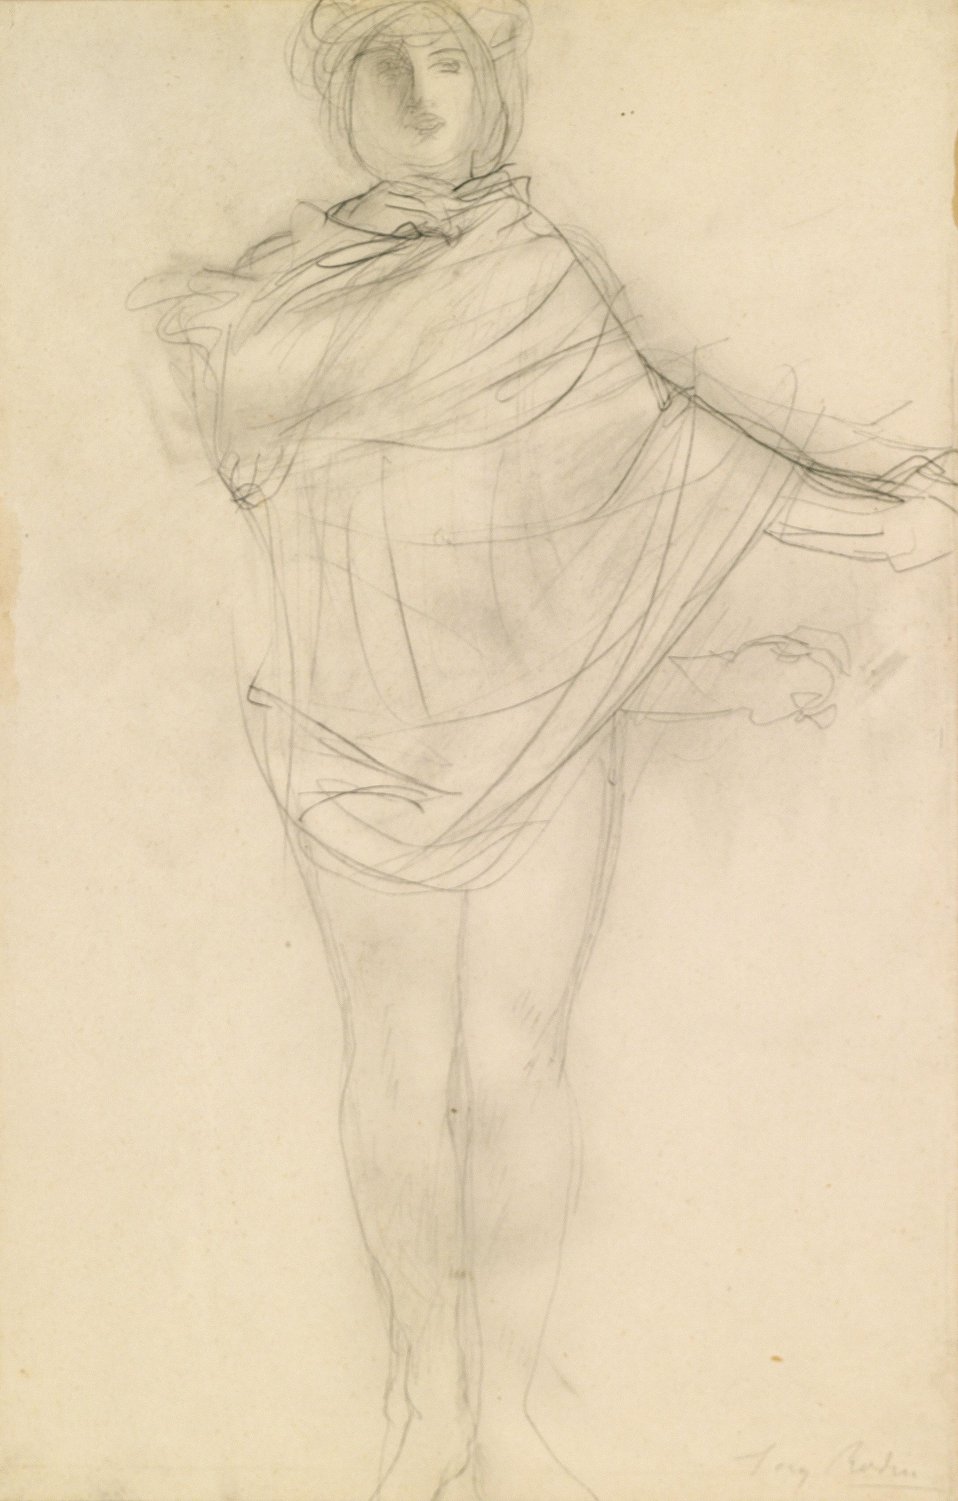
Femme drapée, signiert Auguste Rodin, Bleistift auf Papier auf dünnem Karton, 31 x 20 cm